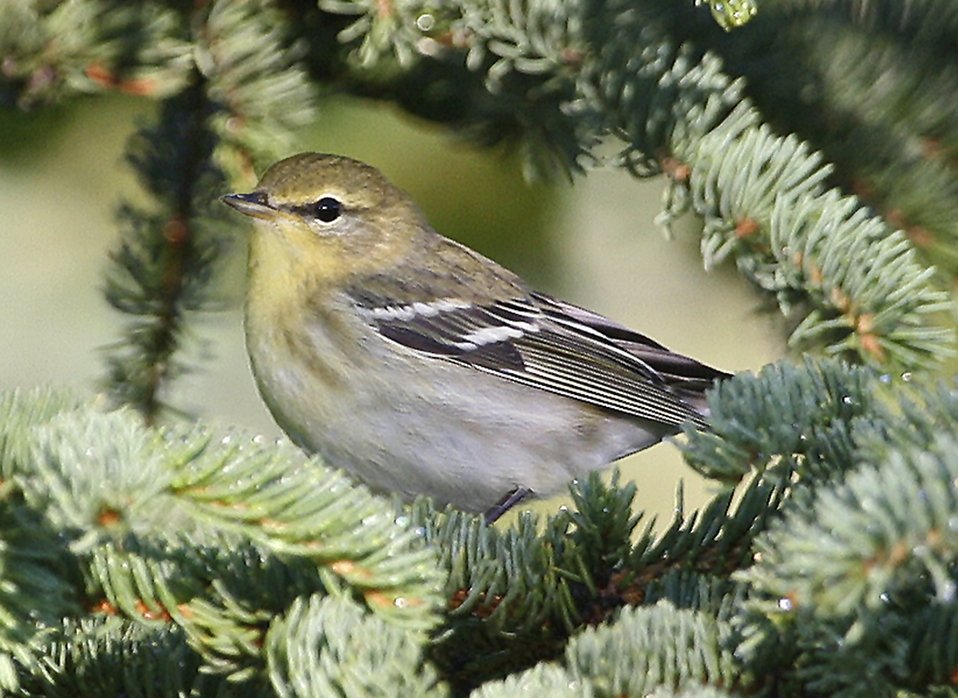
Blackpoll warbler

Fall plumage of the blackpoll warbler.